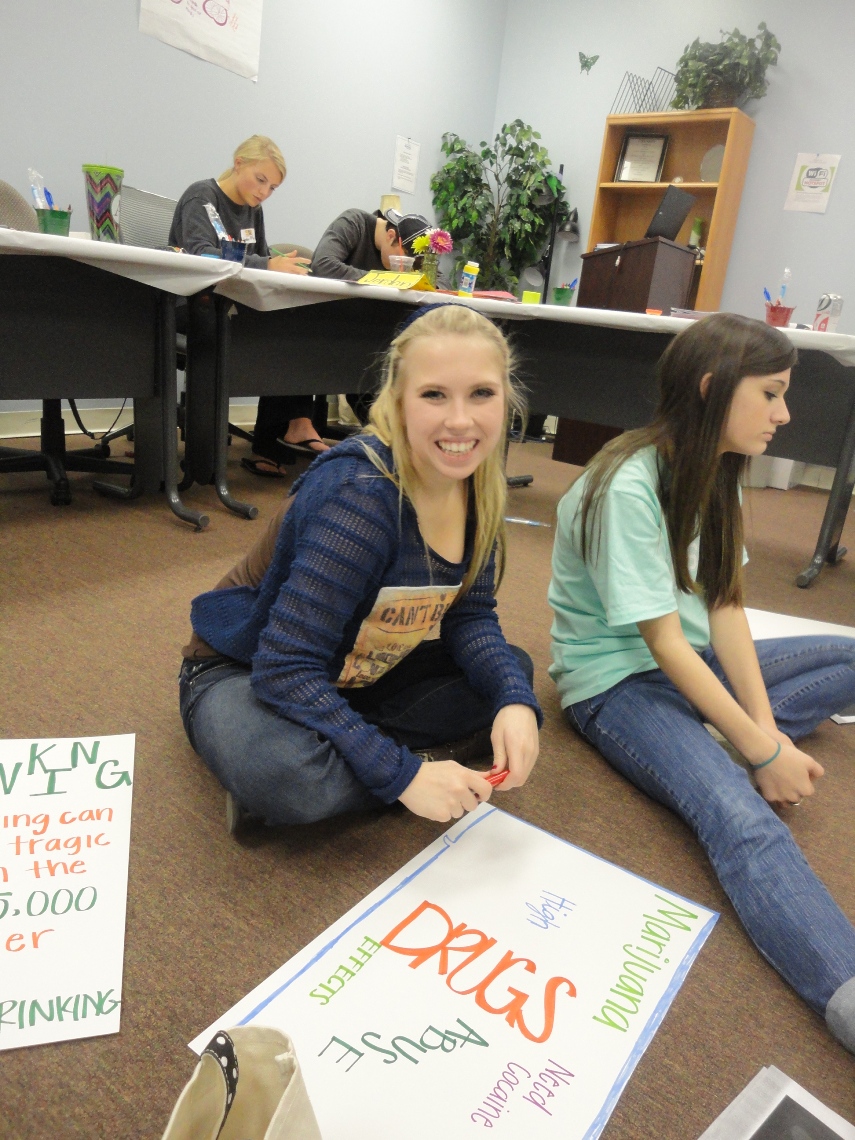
DREAM's, MS Student Advisory Board of Youth Highway Safety NDFW 2013

Mississippi High School Students participate in NDFW 2013 events.